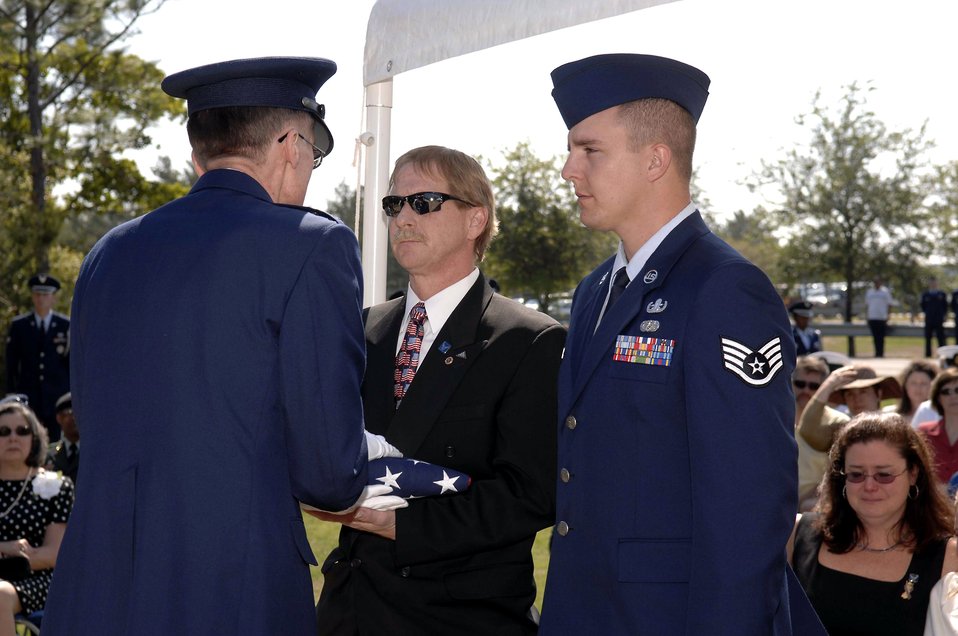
Explosive ordnance members honor fallen heroes

Lt. Gen. Donald Wetekam presents an American flag to Senior Airman Elizabeth Loncki's father, Stephen Loncki, and her fiance`, Staff Sgt. Jayson Johnson during the Explosive Ordnance Disposal's 38th Annual Memorial Service held April 21 at Eglin Air Force Base's Kauffman EOD Training Complex in Fla. Airman Loncki was killed Jan. 7 while responding to an improvised explosive device near Baghdad, Iraq. General Wetekam is the deputy chief of staff for Installations and Logistics Headquarters U.S. Air Force in Washington D.C.